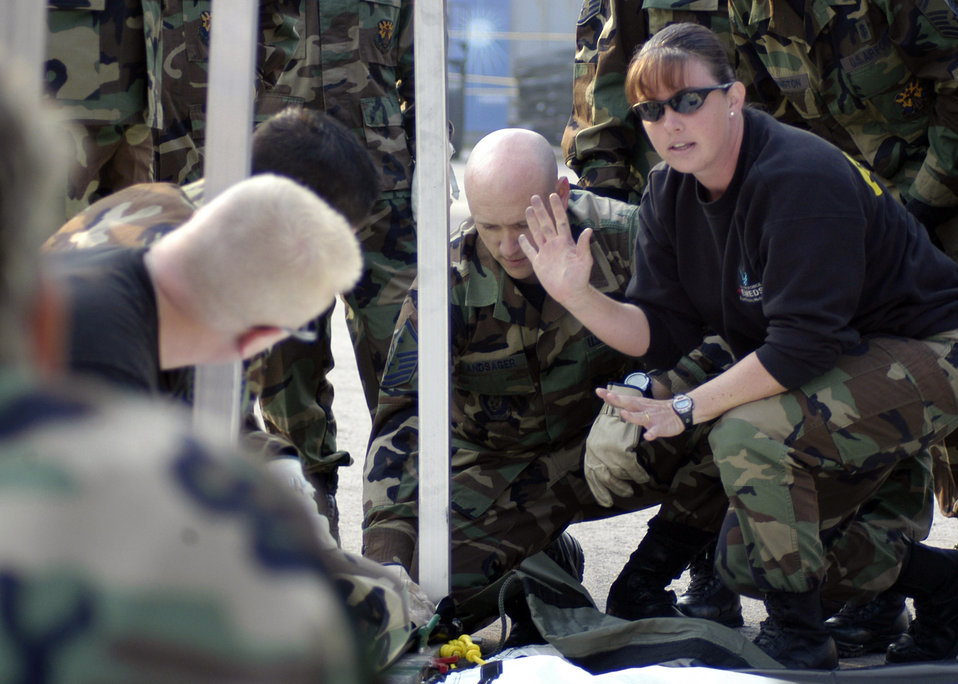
Airmen deploy to Kunsan to practice medical skills

Tech. Sgt. Shalien Edmondson trains Airmen from the Air Force Reserve Command's 944th Medical Squadron at Luke Air Force Base, Ariz., on building medical tents Oct. 23 at Kunsan Air Base, South Korea. Airmen from the 944th Medical Squadron and other reservists from the 10th and 4th Air Forces are deployed here to receive expeditionary medical system training. Sergeant Edmondson is an instructor assigned to the Air Force School of Aerospace Medicine at Brooks City-Base, Texas.